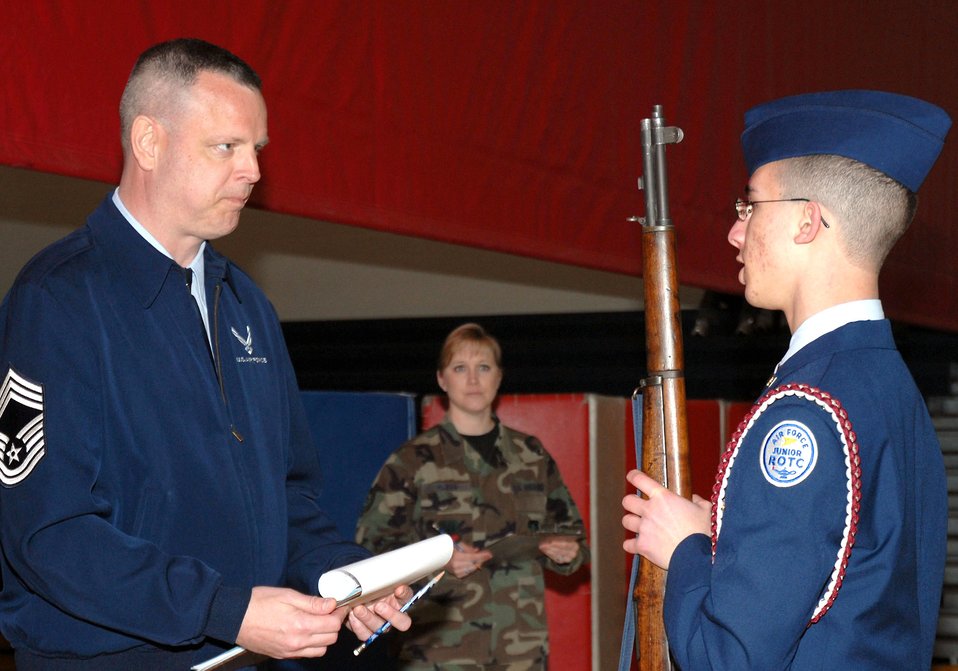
Airmen judge junior ROTC drill competition

Chief Master Sgt. Michael J. Stephenson listens as an Air Force Junior ROTC cadet from Lebanon High School, Ohio, requests that his flight be allowed to use the drill floor for the armed exhibition at a junior ROTC drill team championships March 29 at Walter E. Stebbins High School in Riverside, Ohio. Chief Stephenson is the National Air and Space Intelligence Center superintendent from Wright-Patterson Air Force Base, Ohio.